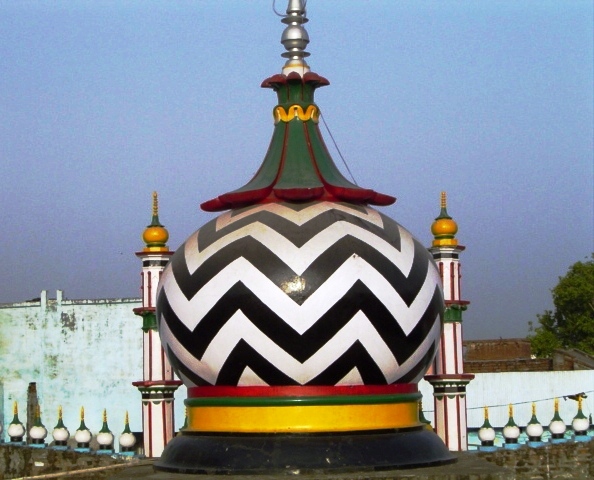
A back view of Dargah Aala Hazrat which is situated in Soudagaran Baraily in India